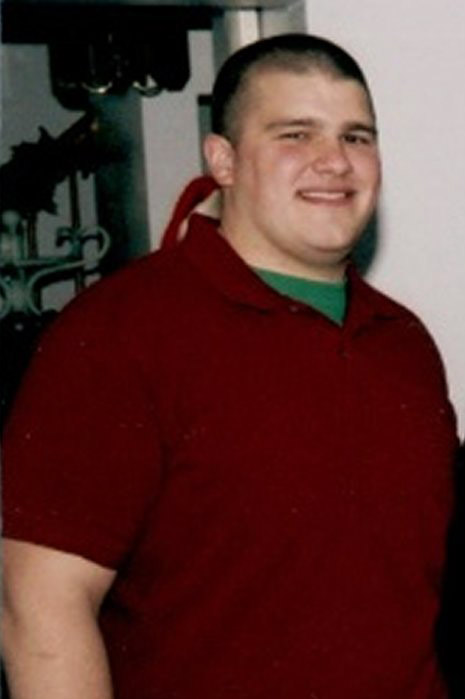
Recruit loses 120 pounds to join Air Force

Daniel Kuertz of Columbus, Ohio, recently lost 120 pounds to join the Air Force. Mr. Kuerz is scheduled to enter Basic Military Training in March at Lackland Air Force Base, Texas.